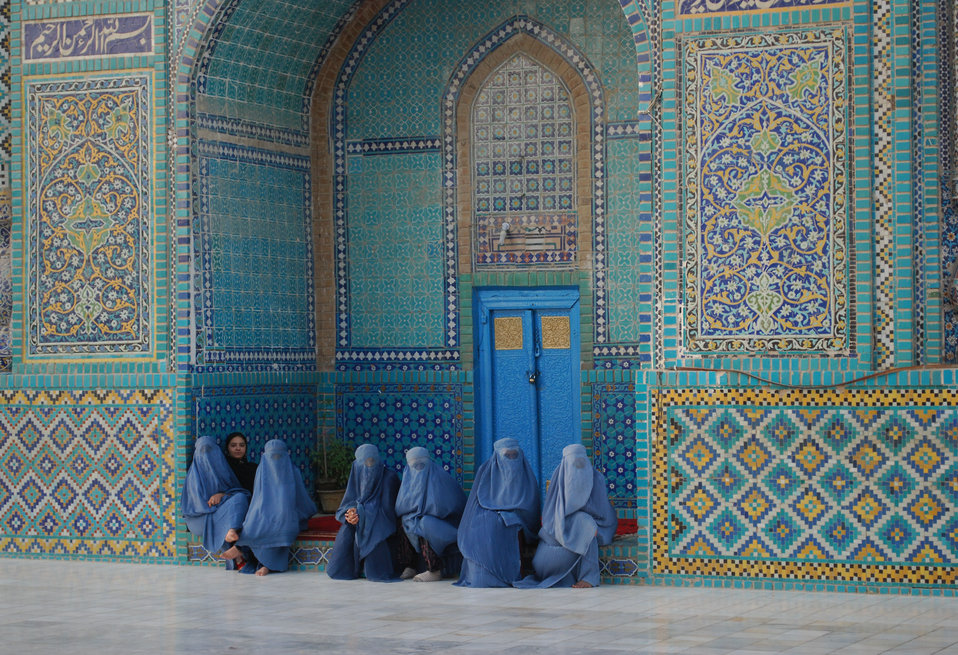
'On the Road' in Balkh Province